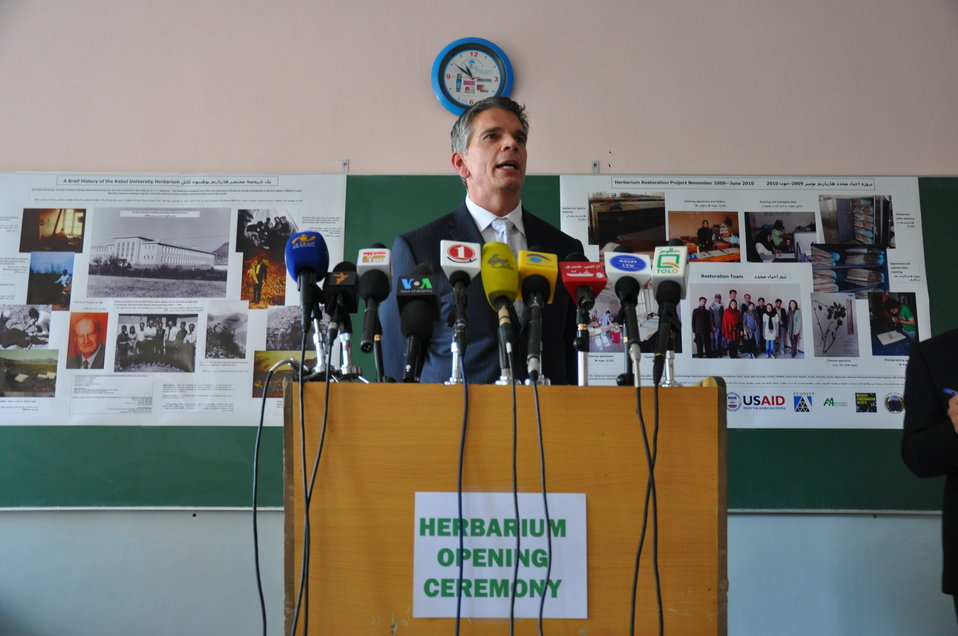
Kabul University Herbarium